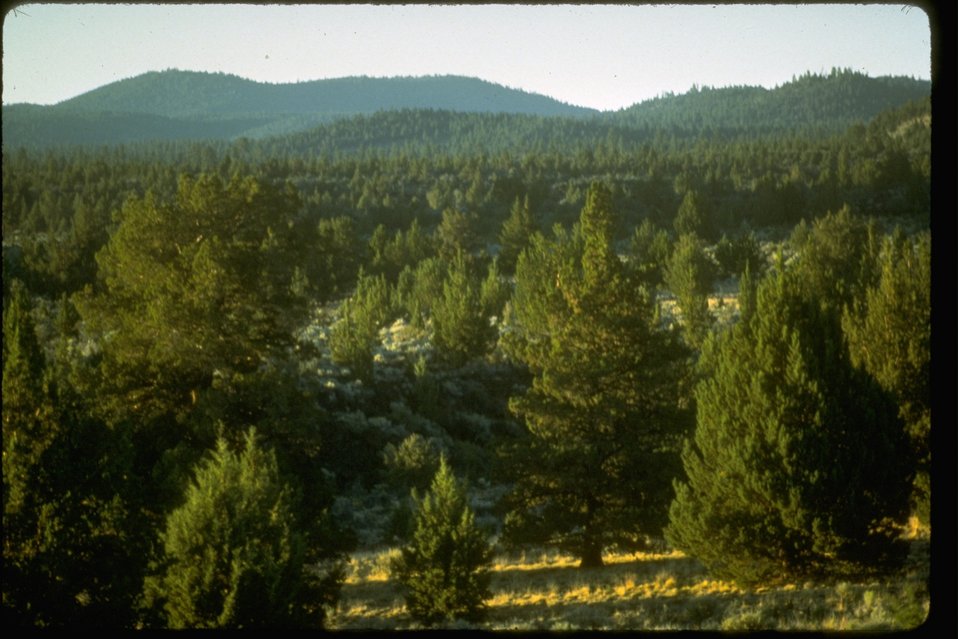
Devils Garden Lava Bed Wilderness Study Area. OR 1-2.